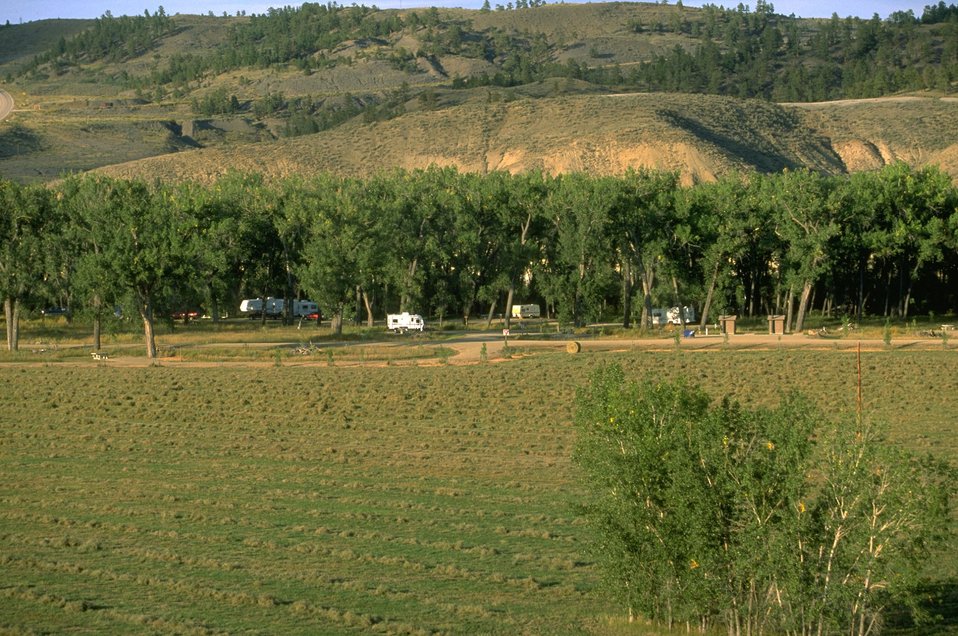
Kipp Recreation Area